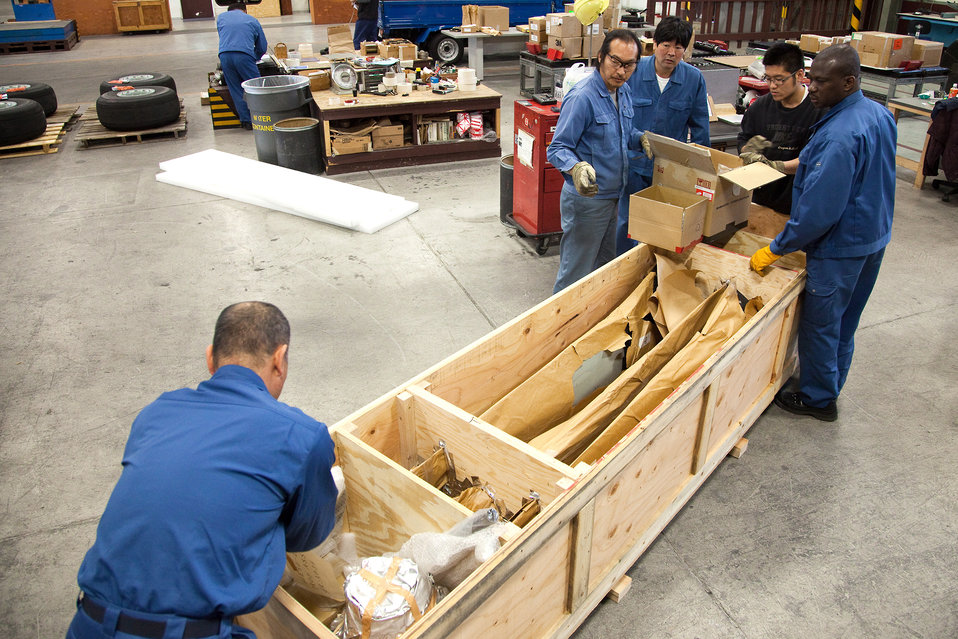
Yokota AB Airmen provide Afghan military with 'props'

Members of the 374th Logistics Readiness Squadron pack C-27 propellers into a custom-made wooden crate April 12, 2011 at Yokota Air Base, Japan. The Yokota AB members were tasked to package and ship 15 sets of propellers, three blades per set, to the Afghan National Army Air Corps for their growing fleet of C-27A Spartans.